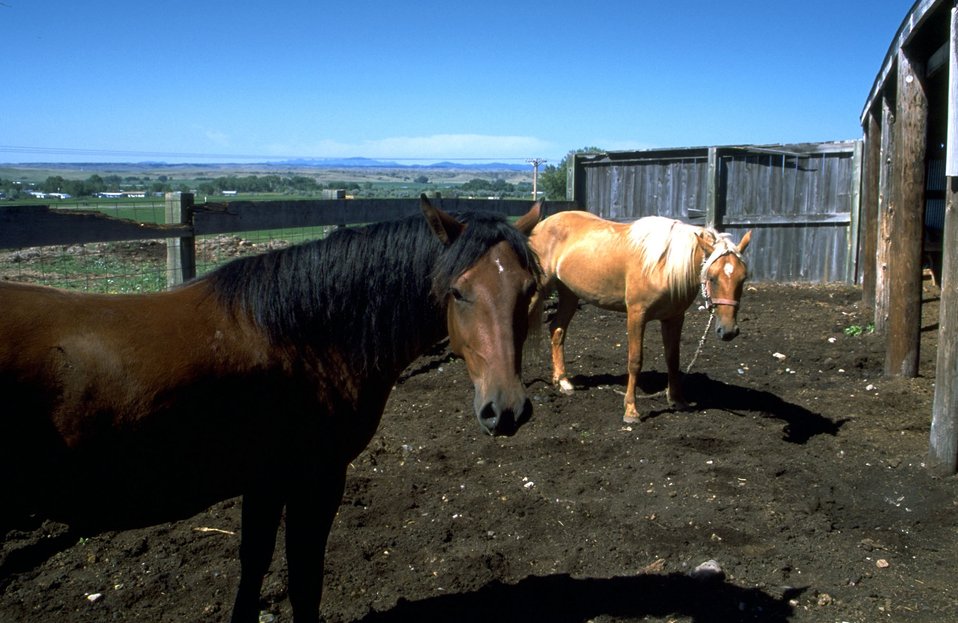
Adopted Horses in a Corral